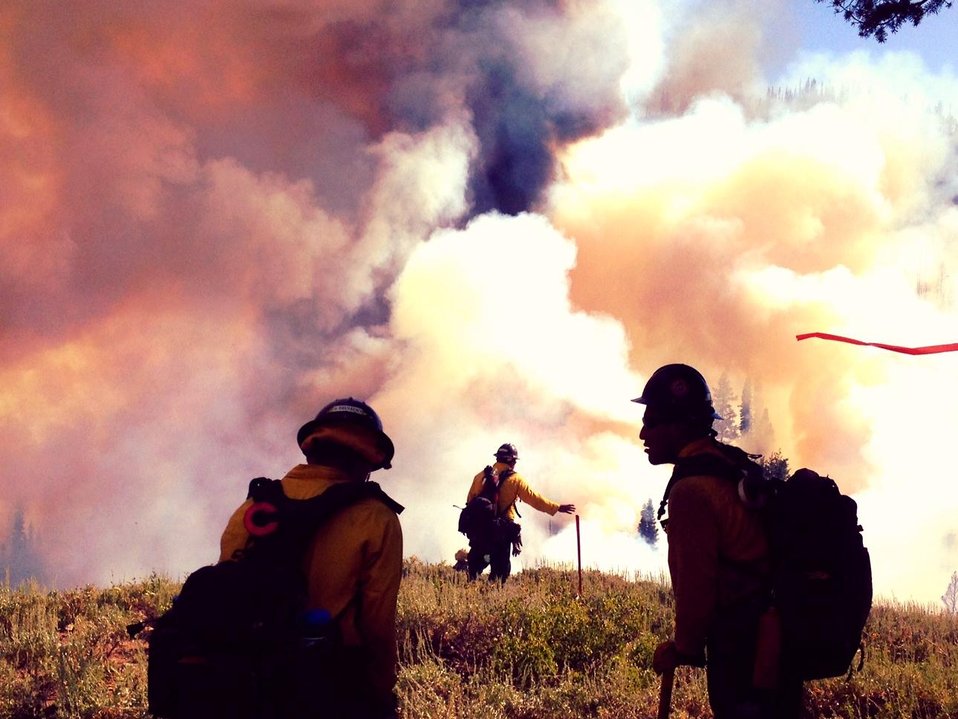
Firefighters work on the Ridge Fire. The Ridge Fire in the Boise National Forest, ID near Lowman, ID began on Jul. 16, 2013 by lightning and has consumed approximately 5, 263 acres. The Ridge Fire is approximately 38% contained.